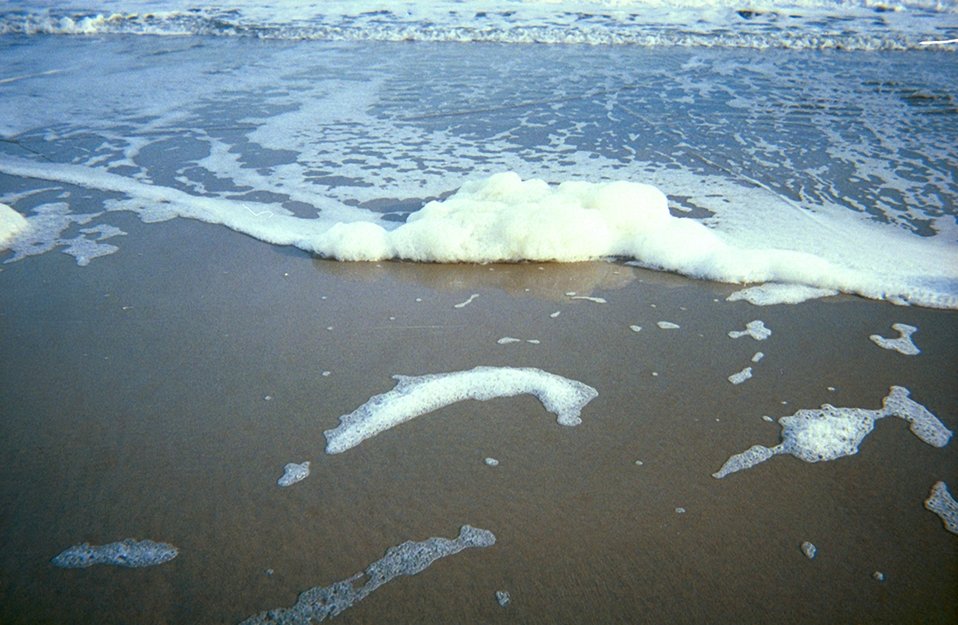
Sea foam being spread shoreward by the incoming waves.